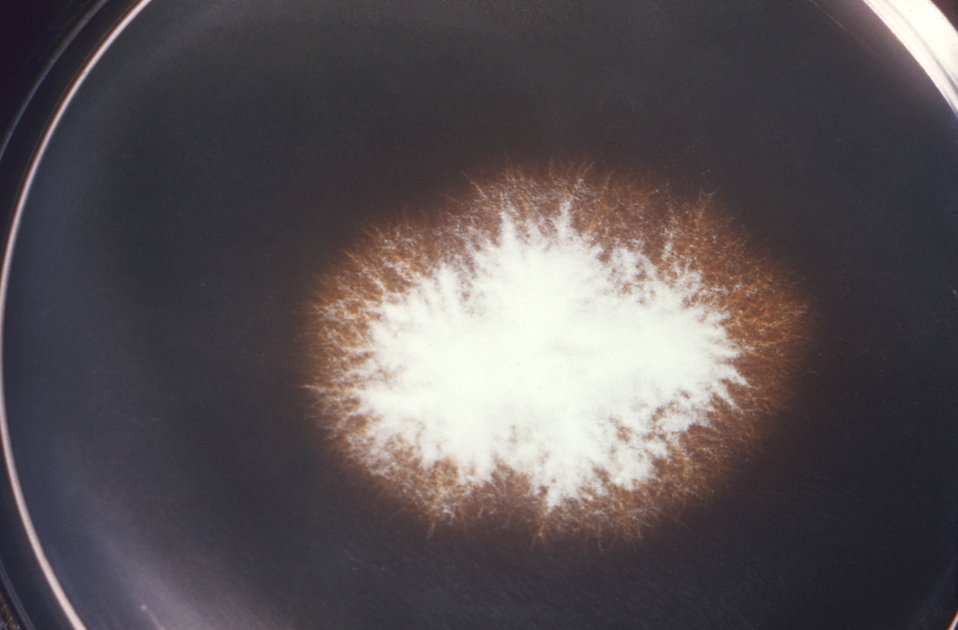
This image depicts a front view of a Petri dish culture plate, containing Sabouraud dextrose agar medium upon which a colony of the dermatophyte, Trichophyton mentagrophytes var. nodulare had been cultivated.